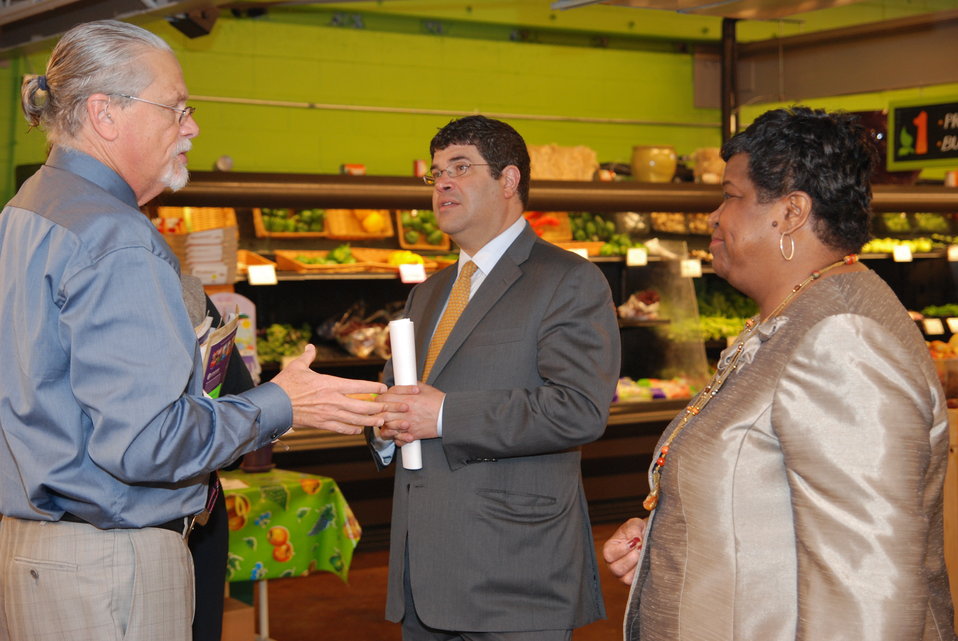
Deputy Secretary Wolin's Trip to New Orleans

Deputy Treasury Secretary Neal Wolin (center) and CDFI Fund Director Donna Gambrell (right) tour a food co-op that's part of a community center built in the Lower 9th Ward following Hurricane Katrina.